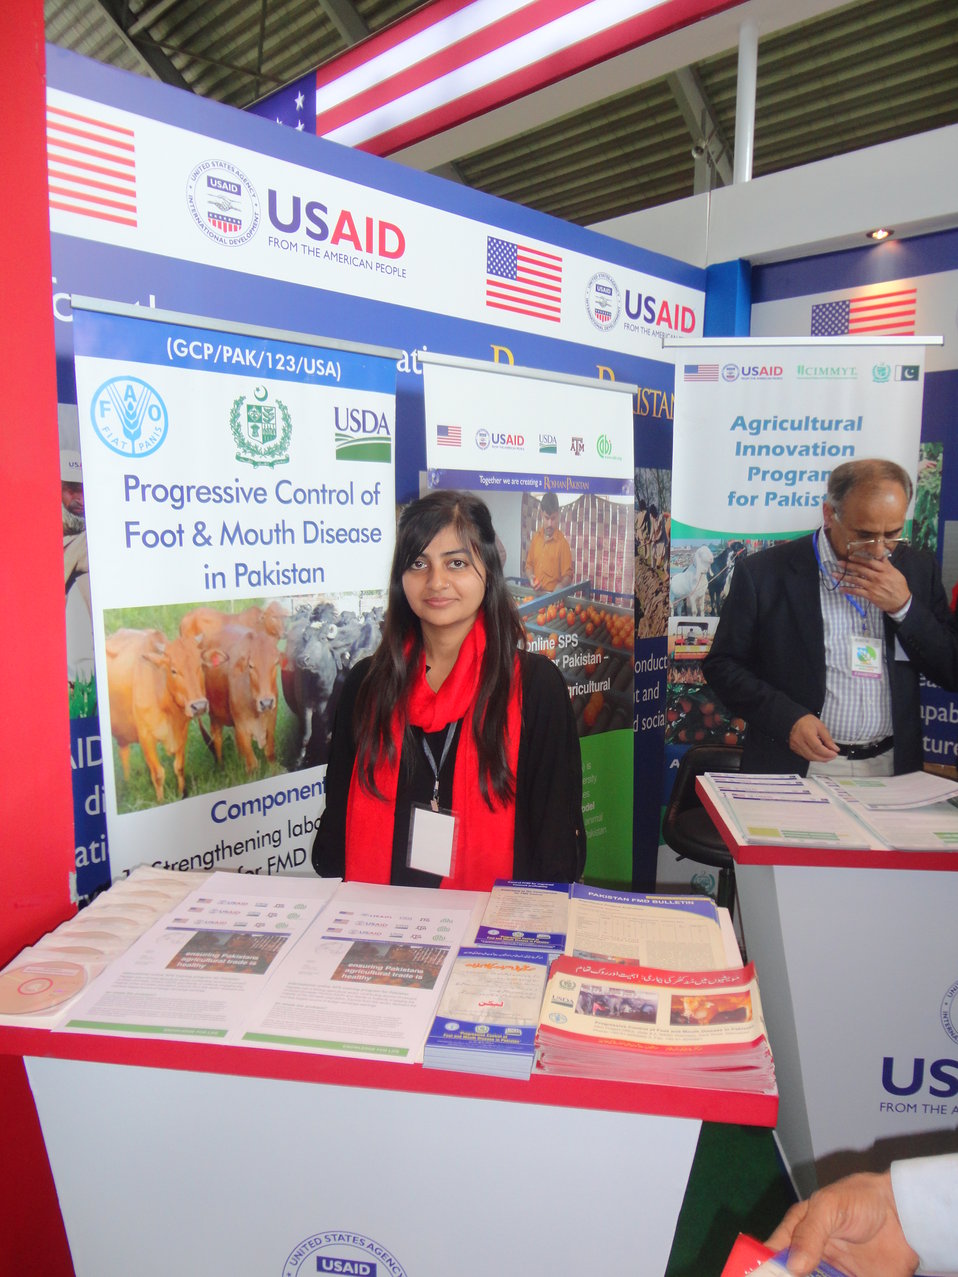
USDA SPS Project at the DAWN Sarsabaz Agri Expo

CABI Team, while representing USDA SPS project at the Dawn Sarsabz Agri Expo.